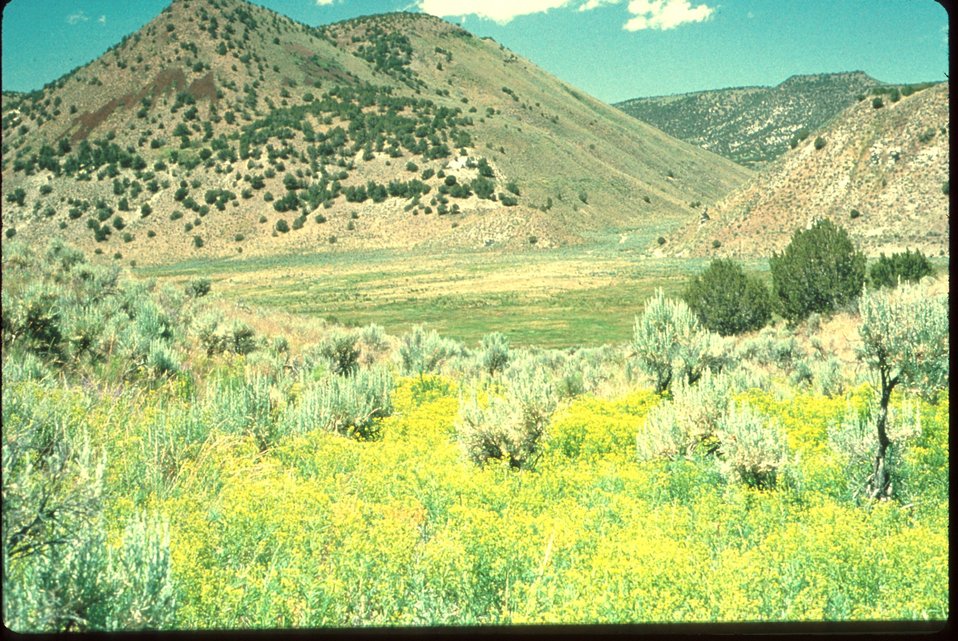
Leafy Spurge in a Riparian area Idaho vegetation Plants in BLM